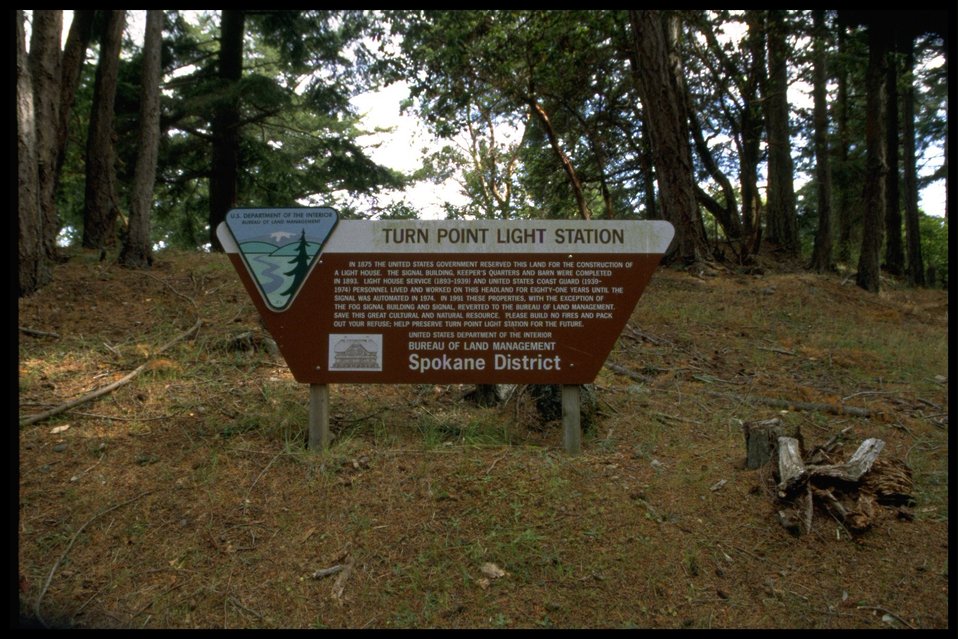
BLM Turn Point Light Station sign.